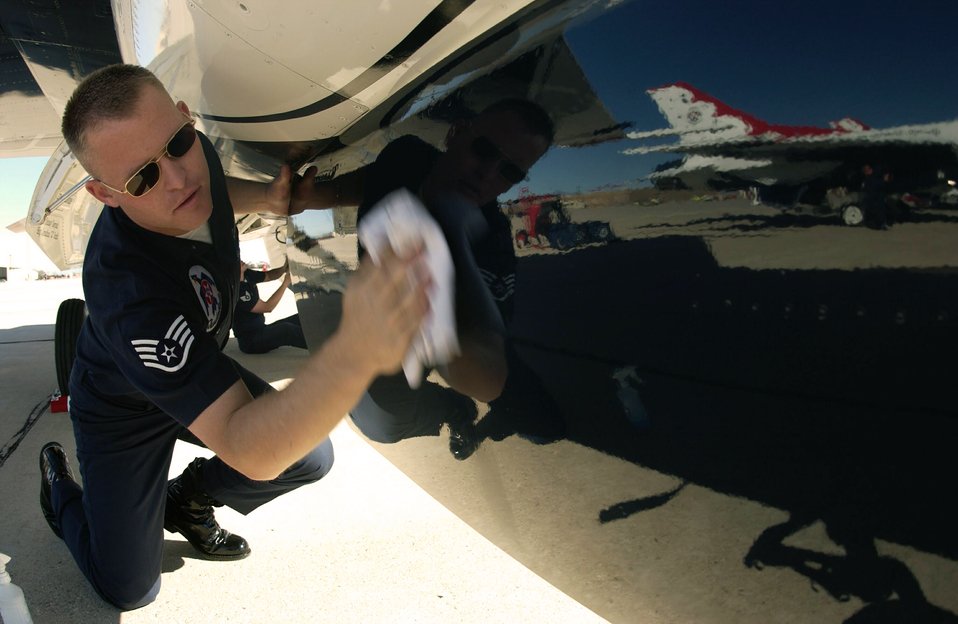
Thunderbird polish

DAVIS-MONTHAN AIR FORCE BASE, Ariz. -- Staff Sgt. Jonathan Jundt buffs the under side of a Thunderbird F-16 Fighting Falcon while preparing for an air show here. Sergeant Jundt is an avionics specialist assigned to the Thunderbirds team.